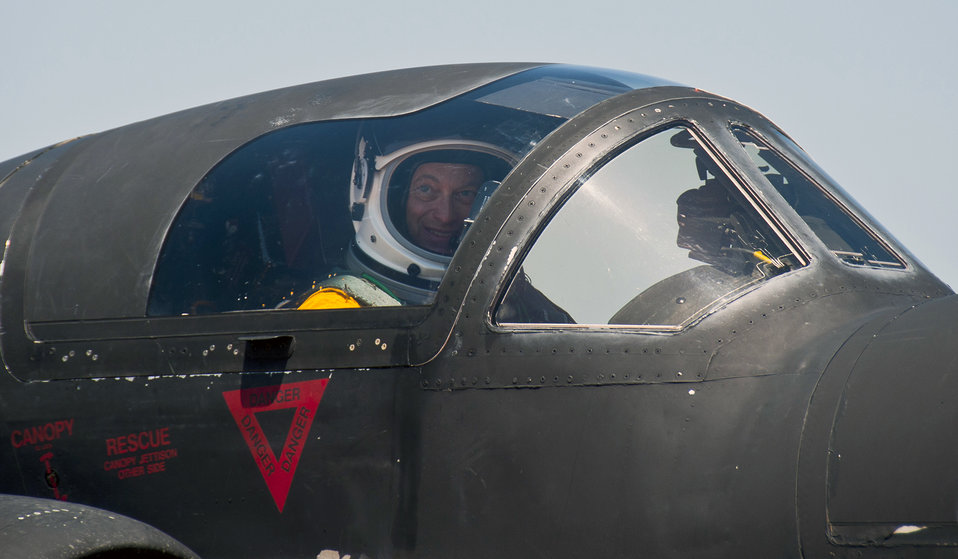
Gary Sinise looks out the cockpit window of a U-2 Dragon Lady June 8, 2011, at Beale Air Force Base, Calif., after returning from a high flight at 70,000 feet.